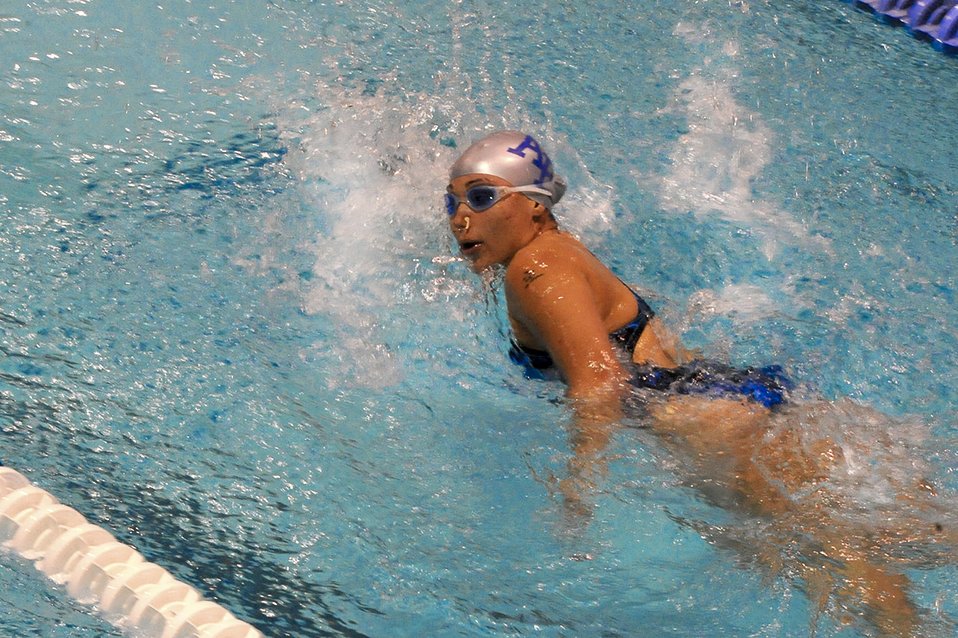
Swimming Prelims

Retired Senior Airman Jennifer M. Stone competes in swimming
competition of the inaugural Warrior Games at the U.S. Olympic
Training Center in Colorado Springs, Colo., May 18, 2011. Some 200
wounded warriors and disabled veterans from all the military services
are competing in paralympic-style athletic events May 16-21.